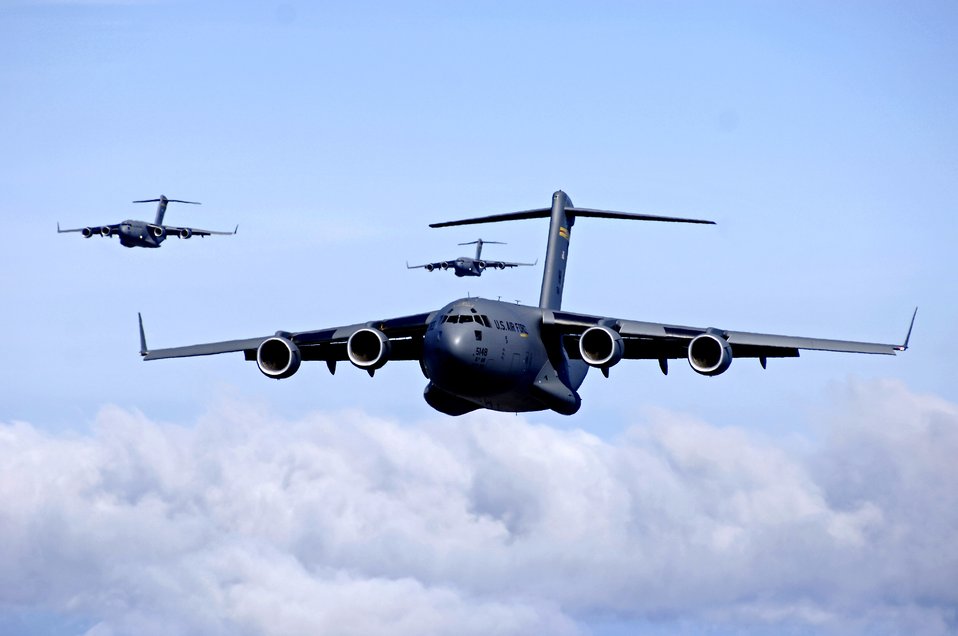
C-17 airdrop training mission

C-17 Globemaster IIIs from the 535th Airlift Squadron, Hickam Air Force Base, Hawaii participate in an airdrop training mission May 16, 2006. The 535th AS is conducting the training to provide multi-element training for the pilots and maintain aircrew proficiency.